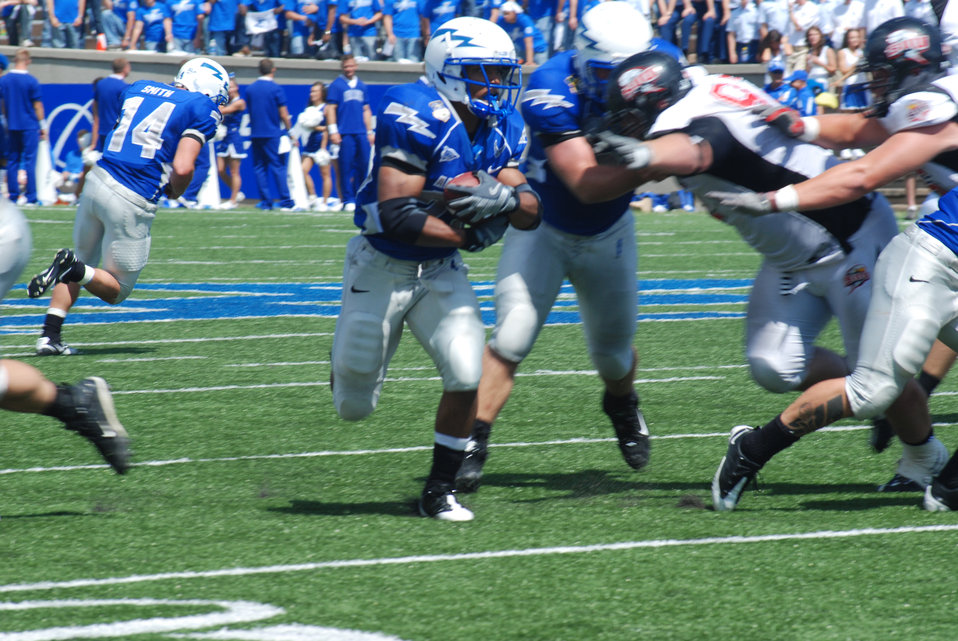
Falcon record two safeties in 41-7 rout

Air Force tailback Kyle Lumpkin runs up the middle during a 41-7 rout of Southern Utah University. Lumpkin had 19 attempts for 77 yards as the Falcons ran for 433 total yards.